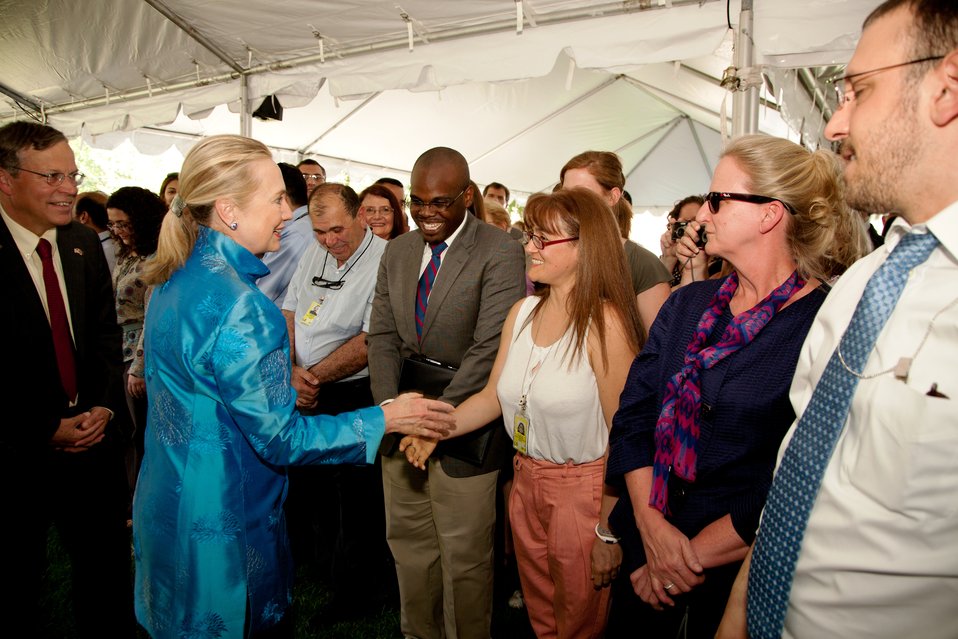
Secretary Clinton Meets With Embassy Yeremen Staff and Families

U.S. Secretary of State Hillary Rodham Clinton meets with the embassy staff and families of Embassy Yerevan in Armenia on June 4, 2012.